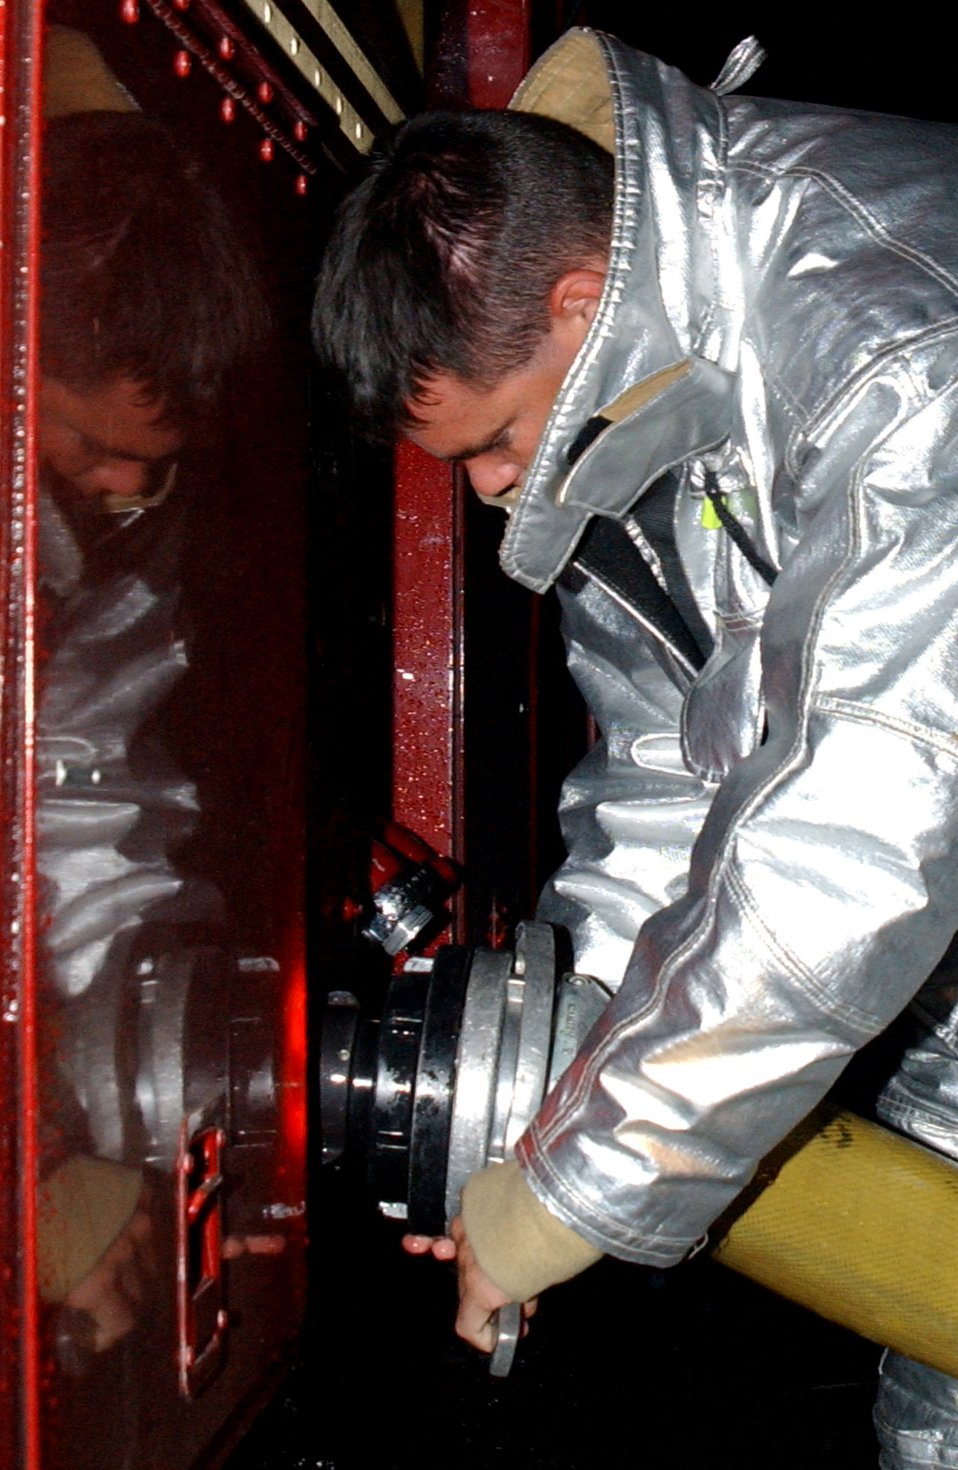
Fire training

FAIRCHILD AIR FORCE BASE, Wash. -- Staff Sgt. Daniel Grimm releases a hose after refilling a crash-response vehicle here recently. The fire department conducts live fire training several times a month to ensure they are prepared to respond to any type of incident. Sergeant Grimm is assigned to the 92nd Civil Engineer Squadron.